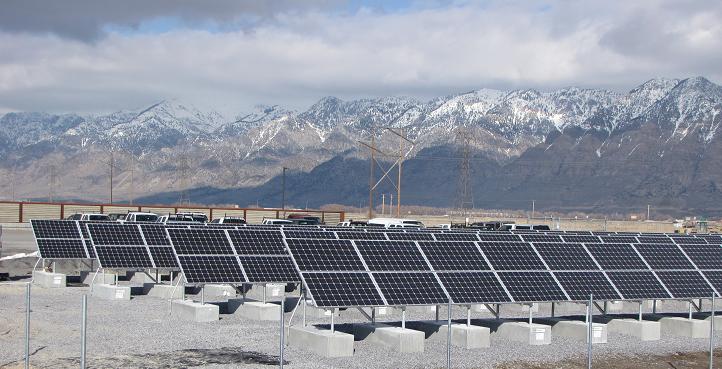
Solar Panels at Bear River Migratory Bird Refuge

View of mountains and new solar panels at Bear River Migratory Bird Refuge in Utah. The Refuge continues to pursue sustainable electricity production with the addition of the solar panels near the James V. Hansen Wildlife Education Center.